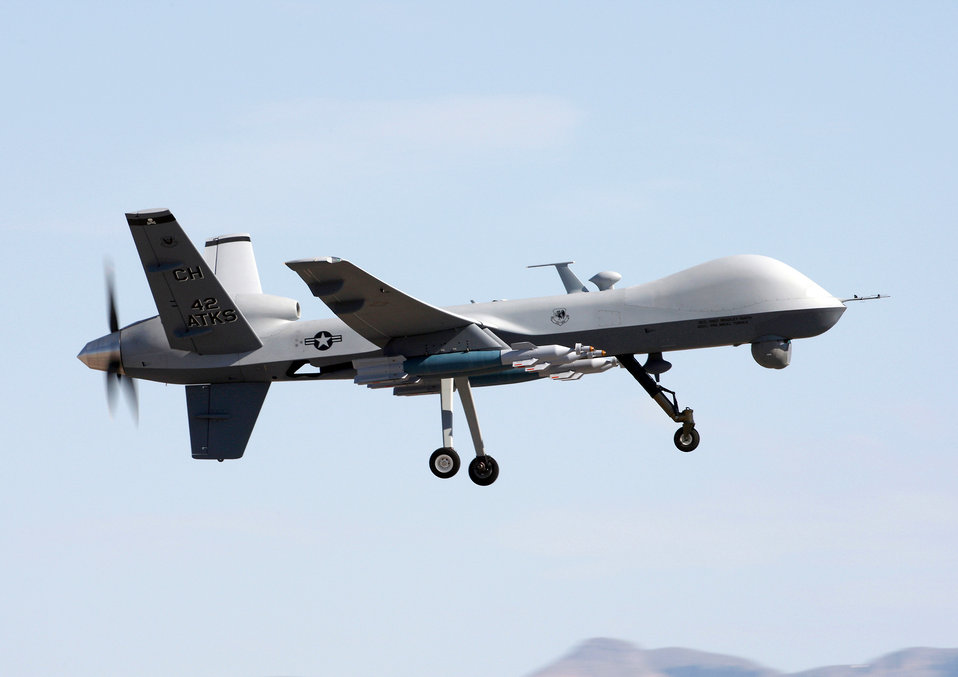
Training to hunt

A MQ-9 Reaper flies above Creech Air Force Base, Nev., during a local training mission June 9, 2009. The 42nd Attack Squadron at Creech AFB operates the MQ-9.